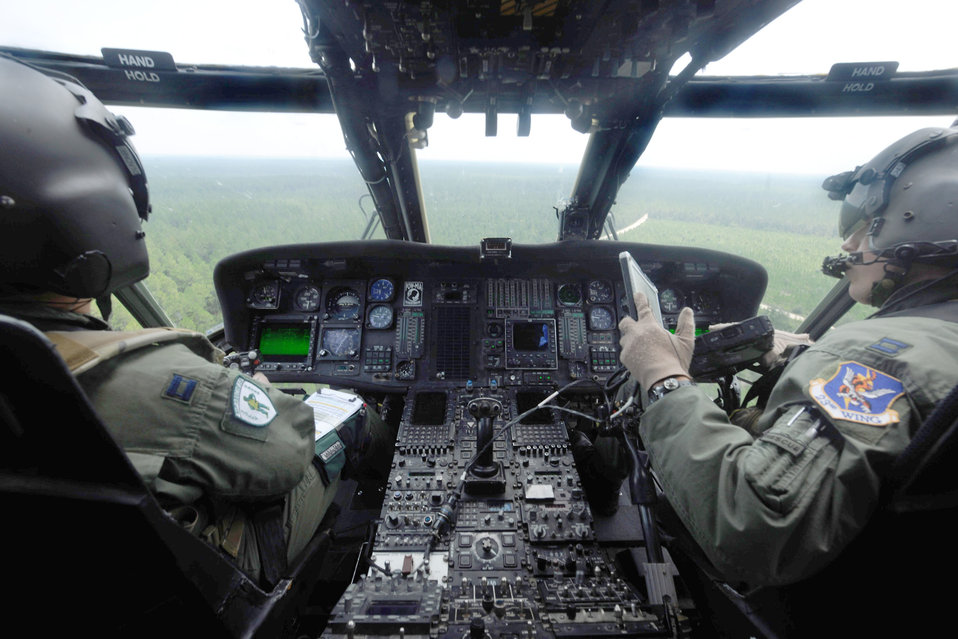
HH-60G munitions training

Two pilots fly an HH-60G Pave Hawk to begin munitions training Aug. 25, 2010, at the bombing and gunnery range at Moody Air Force Base, Ga. Each pilot took turns flying tactical maneuvers during the training. The pilots are from the 41st Rescue Squadron.